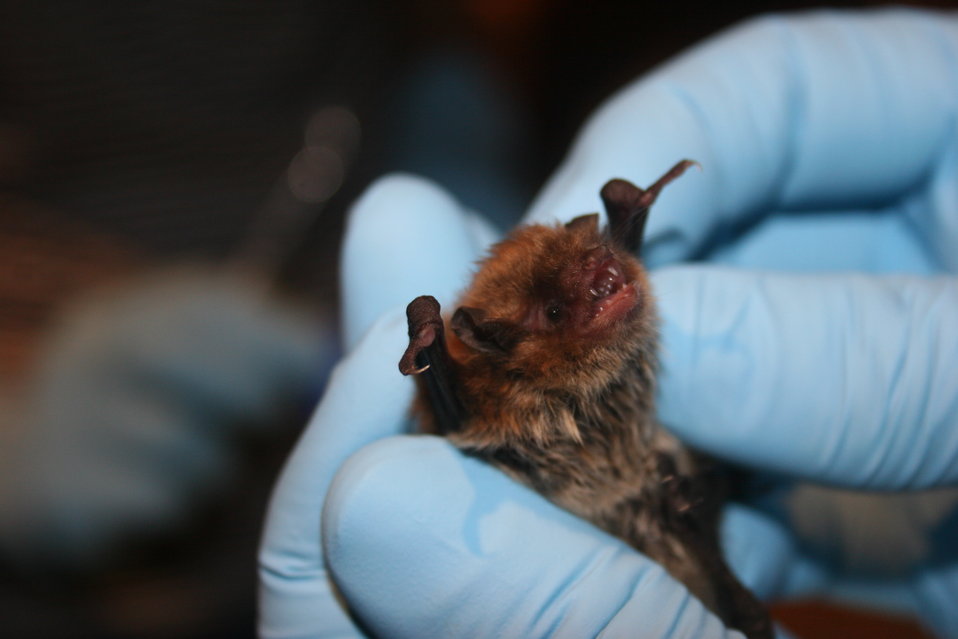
Little brown bat with frostbite damage to ears.